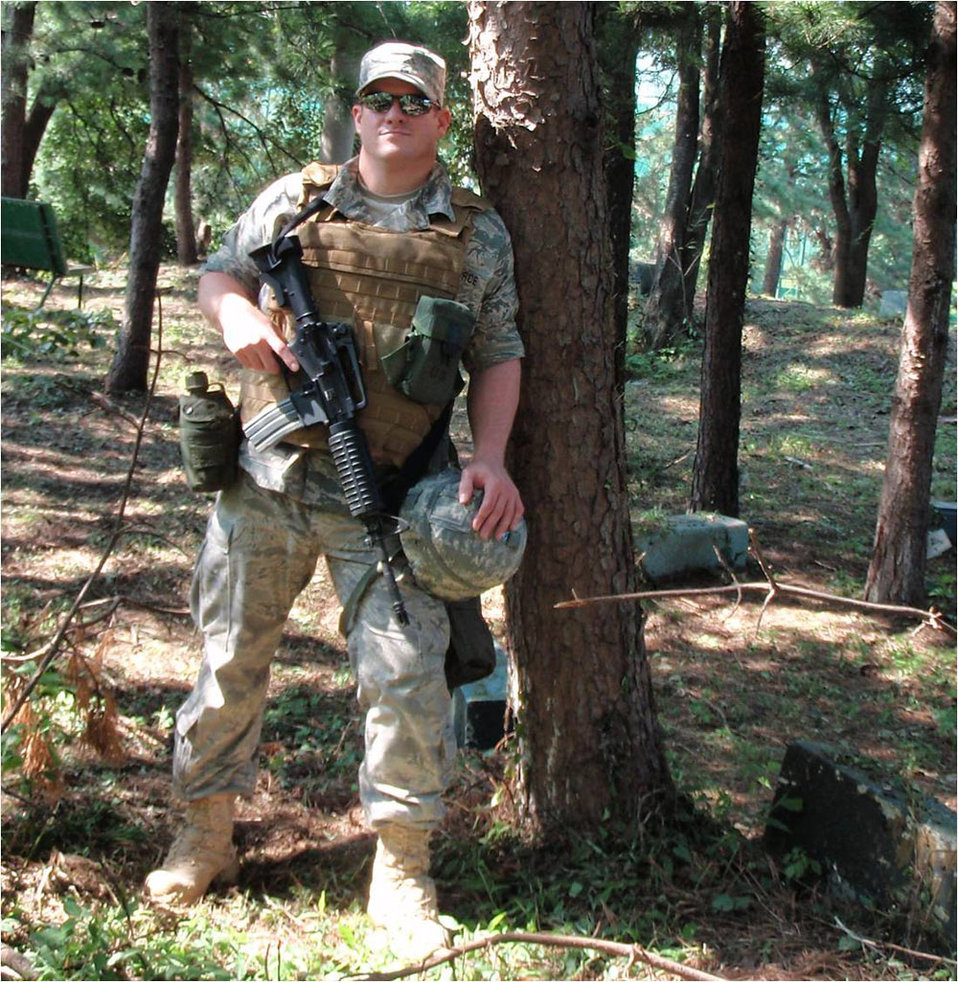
Scott Frickey--Northeast Region

Scott Frickey grew up in rural south west Pennsylvania and thought that the military would provide new opportunities for world travel, new experiences and help with college tuition. He joined the Air Force after graduating high school in 1991 and served for 6 years of active duty. In 2000 Frickey joined the Pennsylvania Air National Guard and was recently promoted to SMSgt (E-8). Frickey is currently a Wildlife Biologist in the Division of Migratory Birds in the Northeast Regional Office. When reflecting upon his experiences in the military Frickey says, “The military has really opened my eyes to different backgrounds, cultures, religions, lifestyles and philosophical viewpoints. I think these lessons have helped me make the most of my career in the U.S. Fish and Wildlife Service. I can better put myself in the shoes of another person and understand their objectives, and either relay information back so they understand or strive to work together for a mutually beneficial situation. And no matter what the situation, I always keep a sense of humor.”